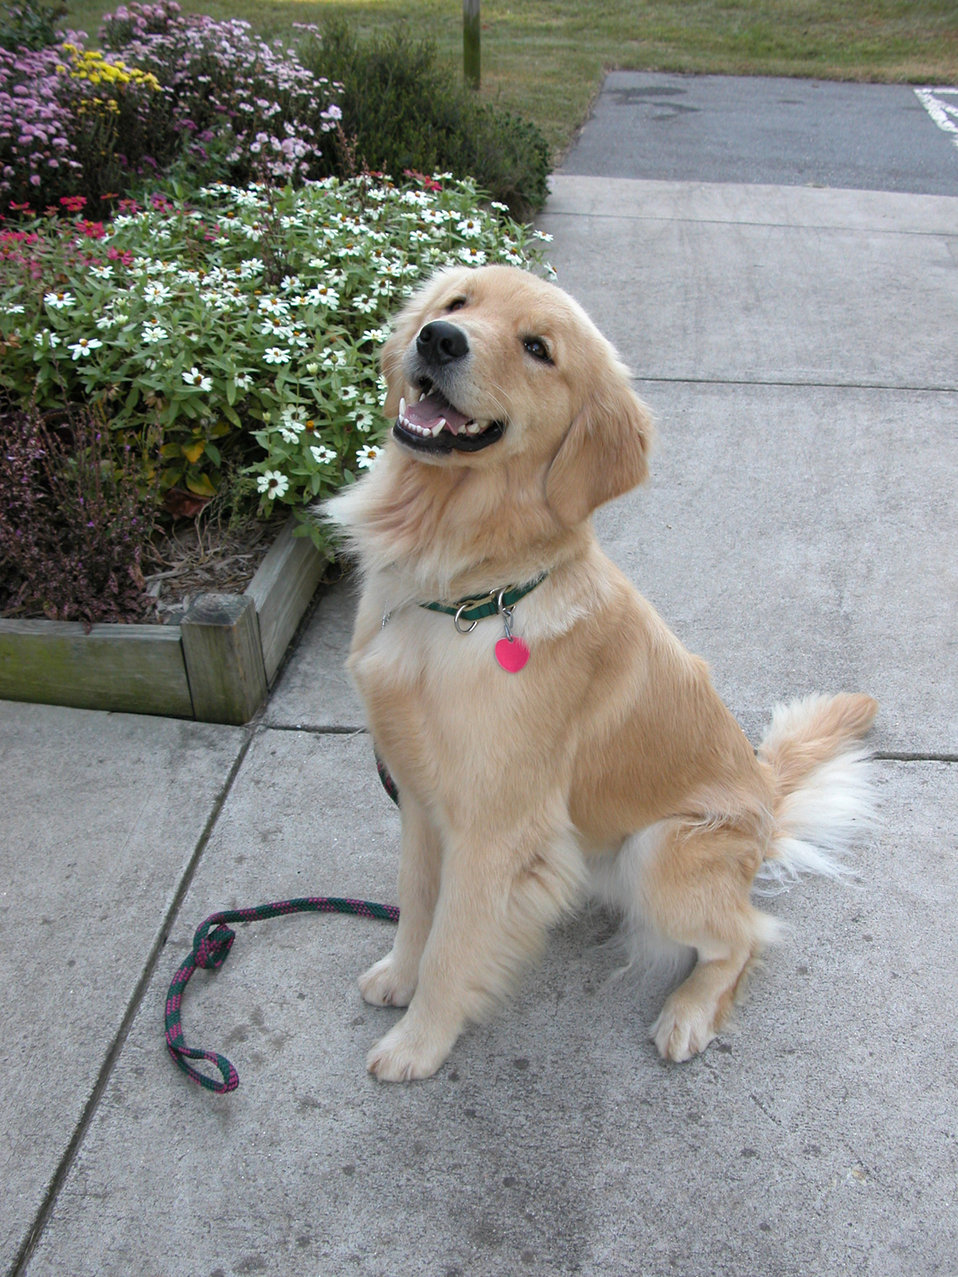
Golden retriever 'finds' girl to help

SCHRIEVER AIR FORCE BASE, Colo. -- Berkley is a 2-year-old golden retriever from Canine Assistants.